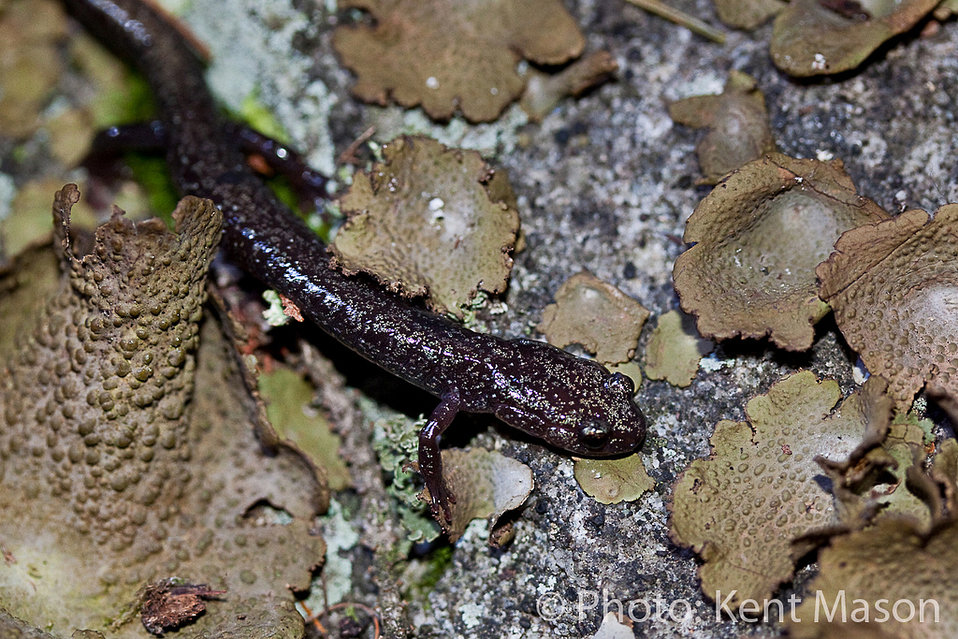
Cheat Mountain Salamander

The Cheat Mountain Salamander has been listed by the USFWS as threatened throughout its range since 1989. This small woodland salamander makes its home in mixed spruce/hardwood forest. Improving the size and connectivity of the red spruce forest on the refuge property will help long-term management and protection of the species.